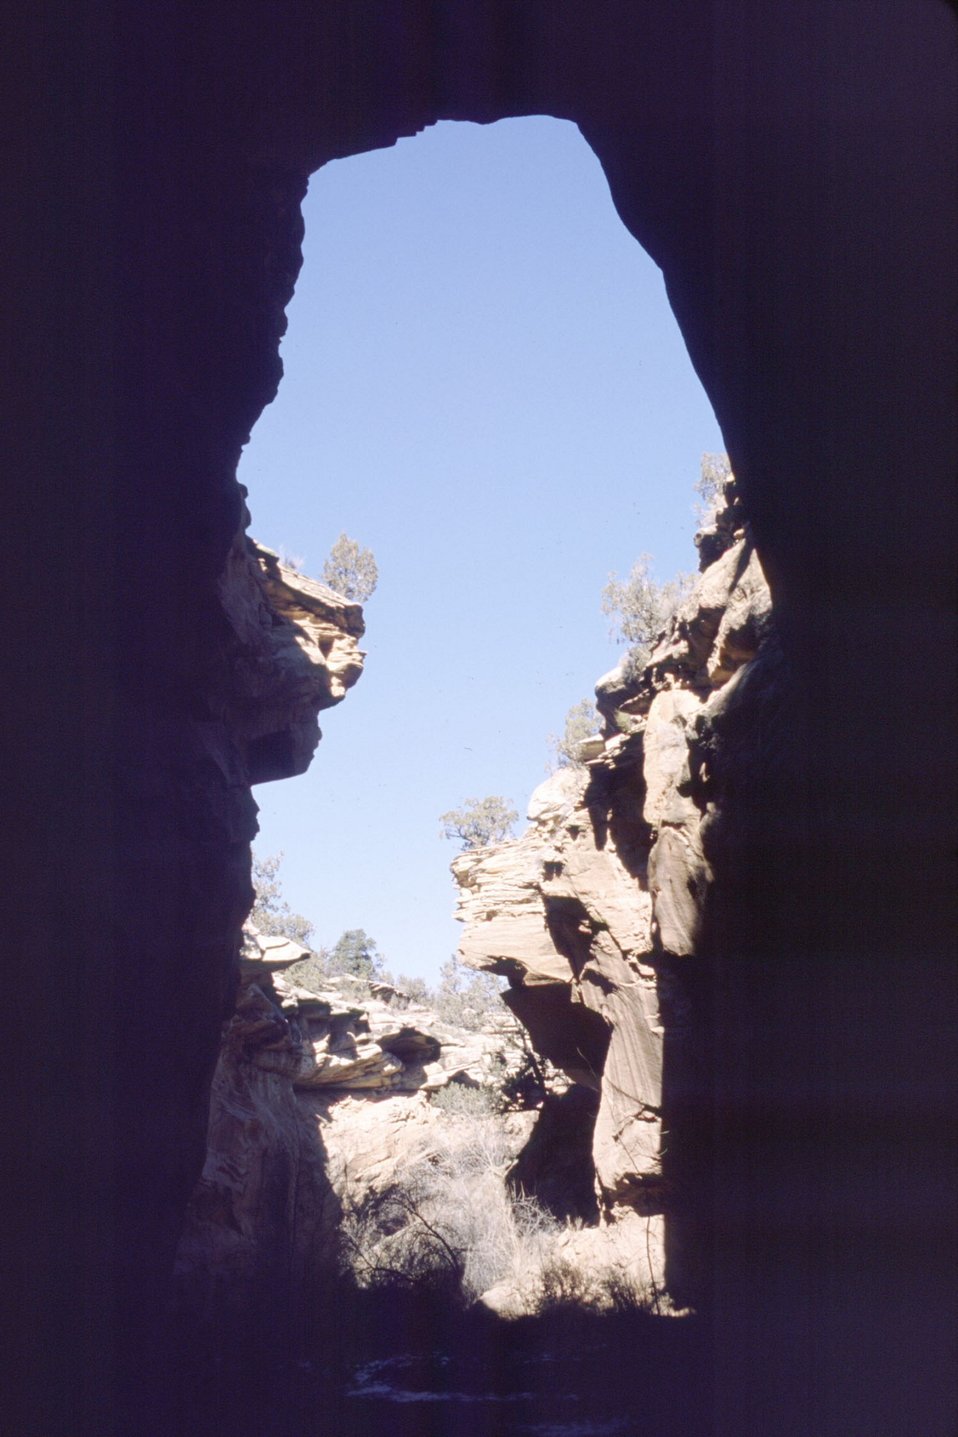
Flume Canyon